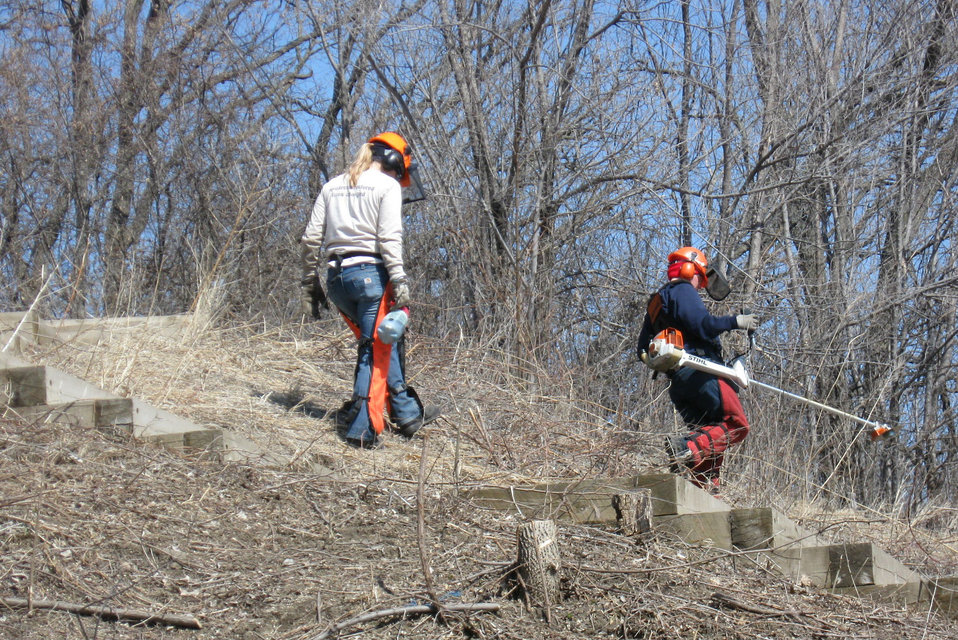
Stopping Resprouting

Crews sprayed chemicals on cut stems to keep them from resprouting.